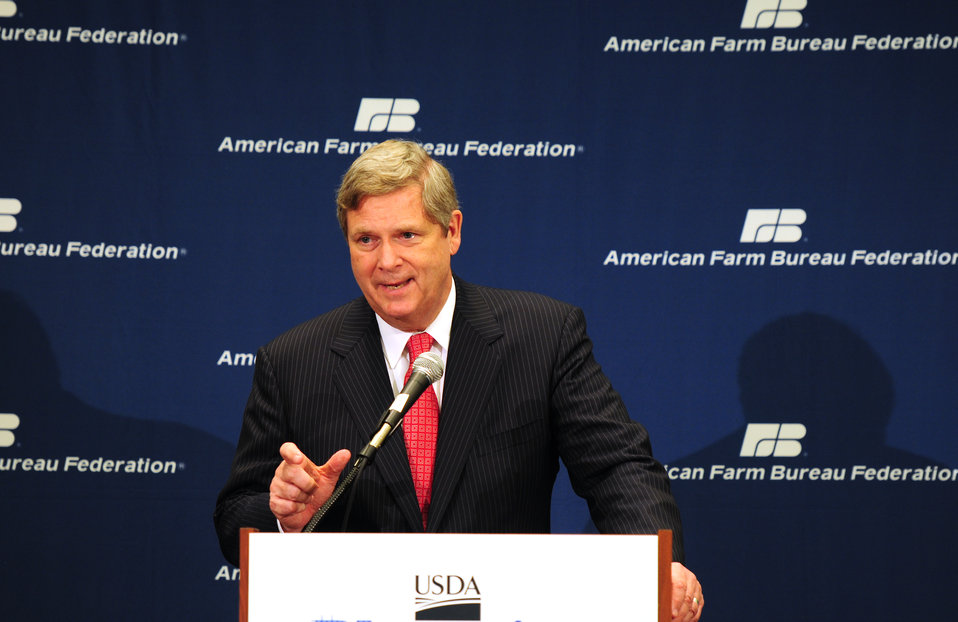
Agriculture Secretary Tom Vilsack presents USDA's Blueprint for Stronger Service, a plan to Increase Efficiency in USDA Operations, on Monday, January 9, 2012 in Honolulu, Hawaii.